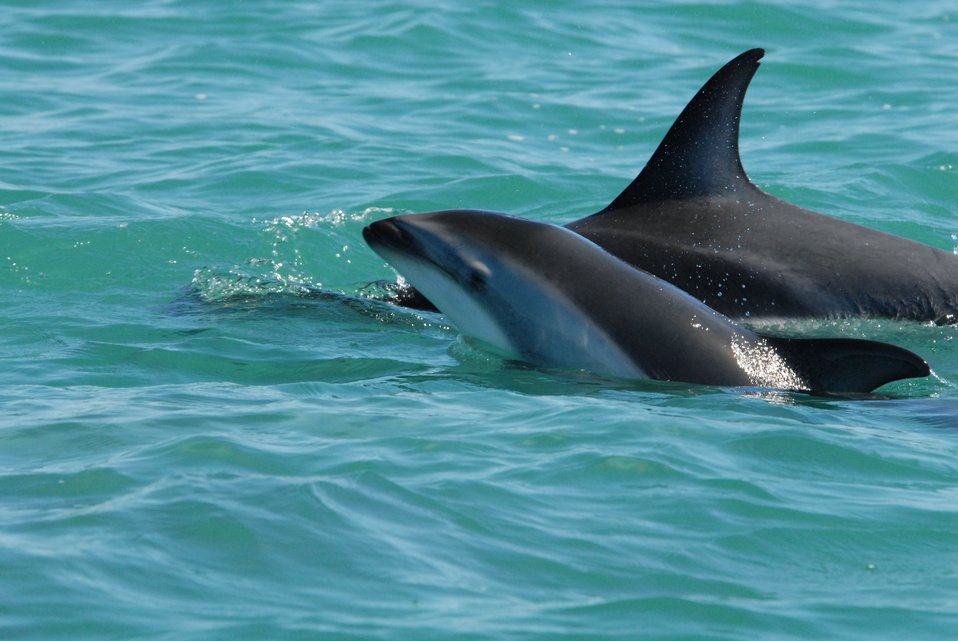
Dusky dolphin (Lagenorhynchus obscurus)